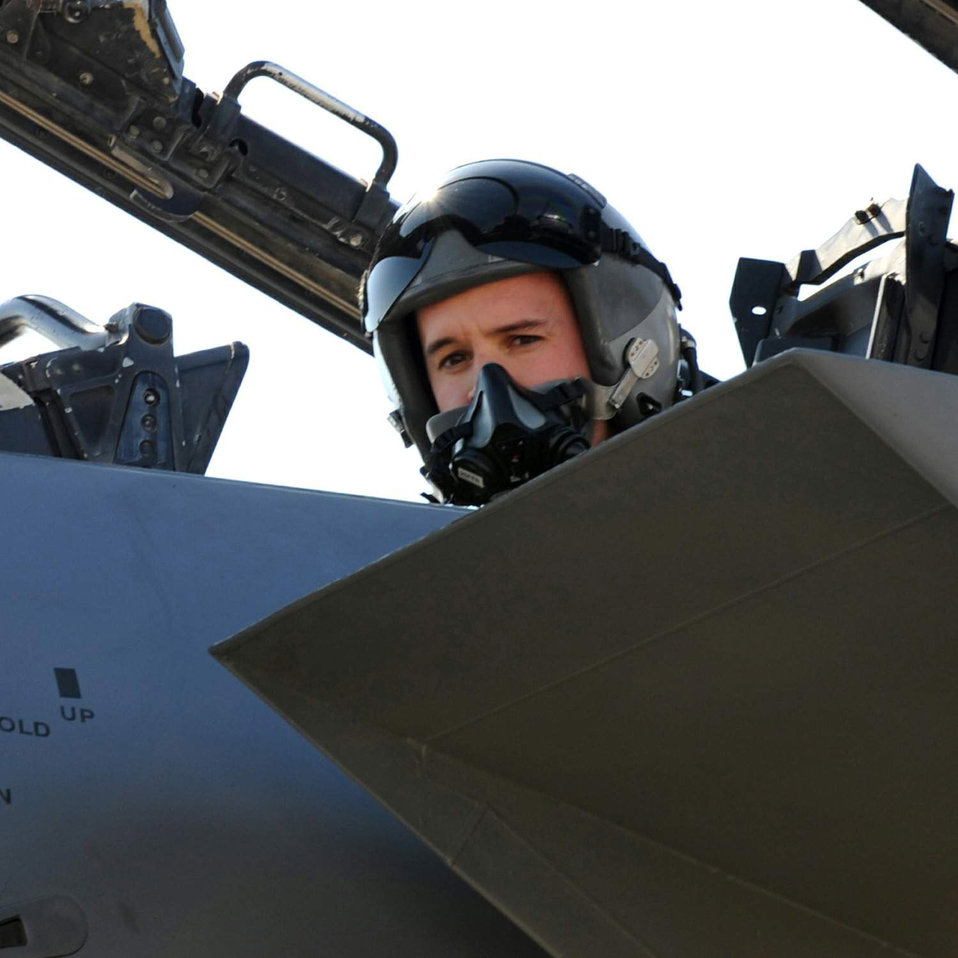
F-15E pilots protect ground forces in massive firefight

Captain Prichard Keely prepares for take off in his F-15E Strike Eagle Feb. 23 from Seymour Johnson Air Force Base, N.C. In April 2008, Captain Keely is a 335th Fighter Squadron weapons systems officer, and his aircrew from the 335th FS provided close-air support for ground forces during a massive firefight in Shok Valley, Afghanistan. The 335th FS was deployed in support of Operation Enduring Freedom.